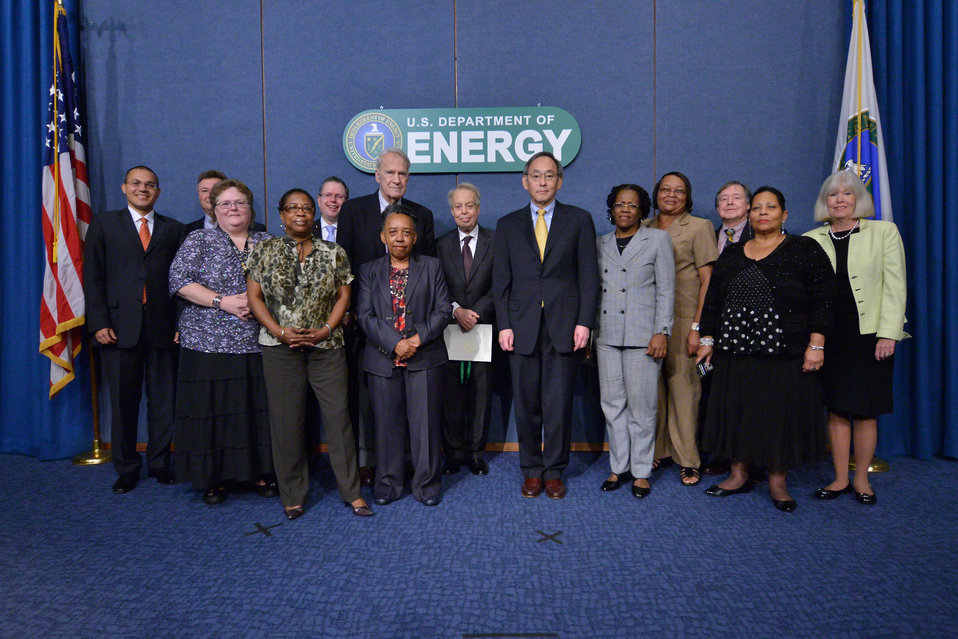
1 General Counsel

Charter employees from the Office of General Counsel with Secretary Steven Chu, current Secretary of Energy, and Secretary James Schlesinger, first Secretary of Energy.